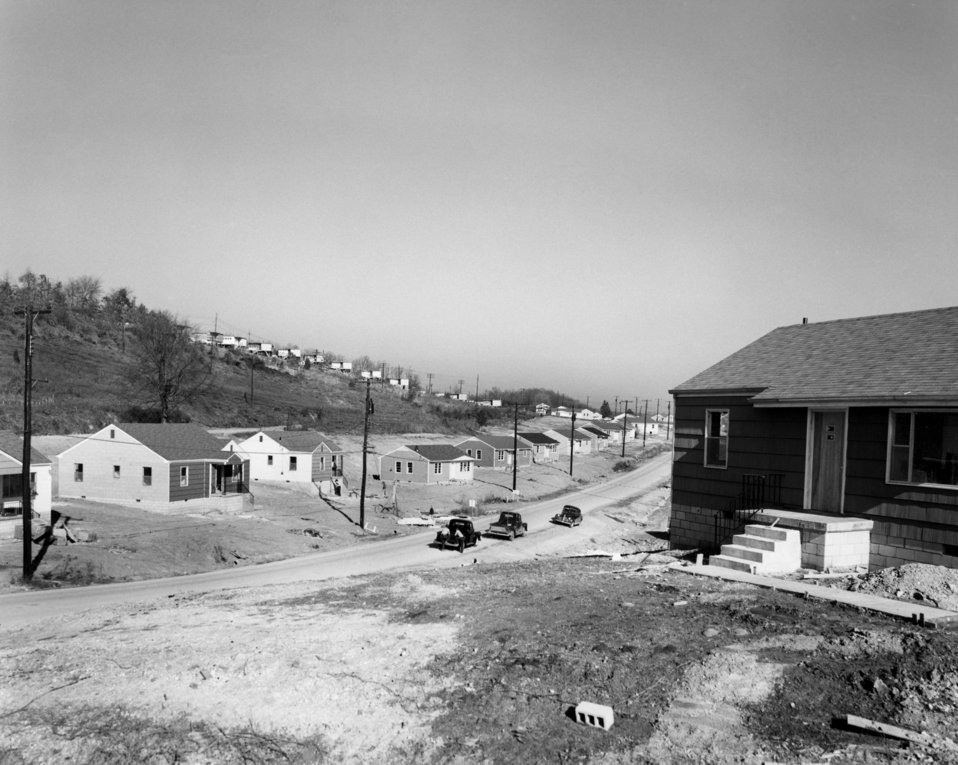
East Village 1954 Housing Oak Ridge

9728-1 DOE photo J.P. Tarver 1-7-1954 Oak Ridge Tennessee